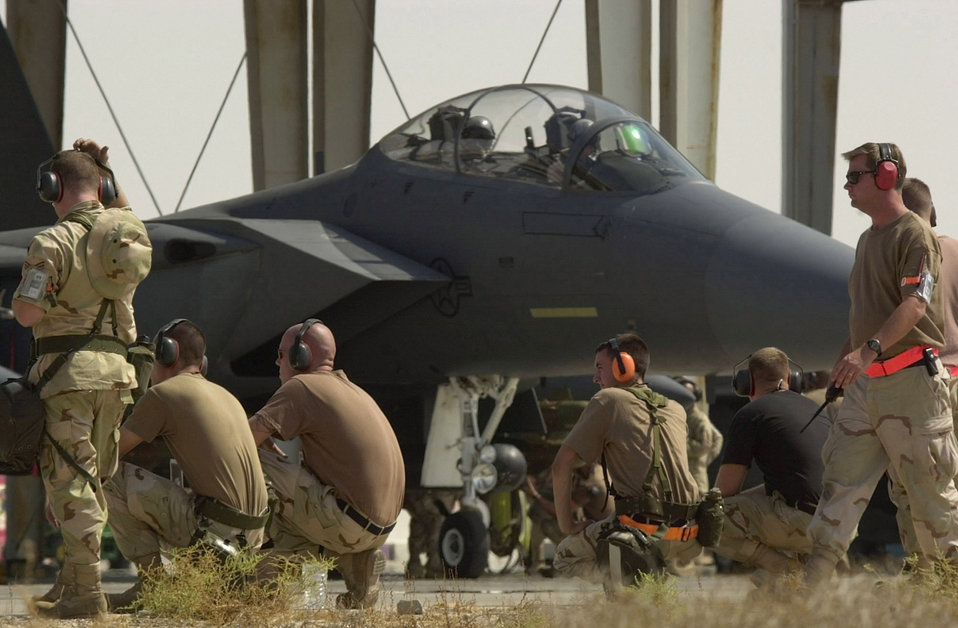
Preparation for flight

OPERATION ENDURING FREEDOM -- Air Force crew chiefs from the 332nd Air Expeditionary Group prepare an F-15E Strike Eagle to fly a joint strike mission from an operating location in support of the U.S. Central Command execution of Operation Enduring Freedom. In the first 33 days of OEF, the Air Force flew more than 2,800 sorties, which was about 45 percent of all OEF sorties.